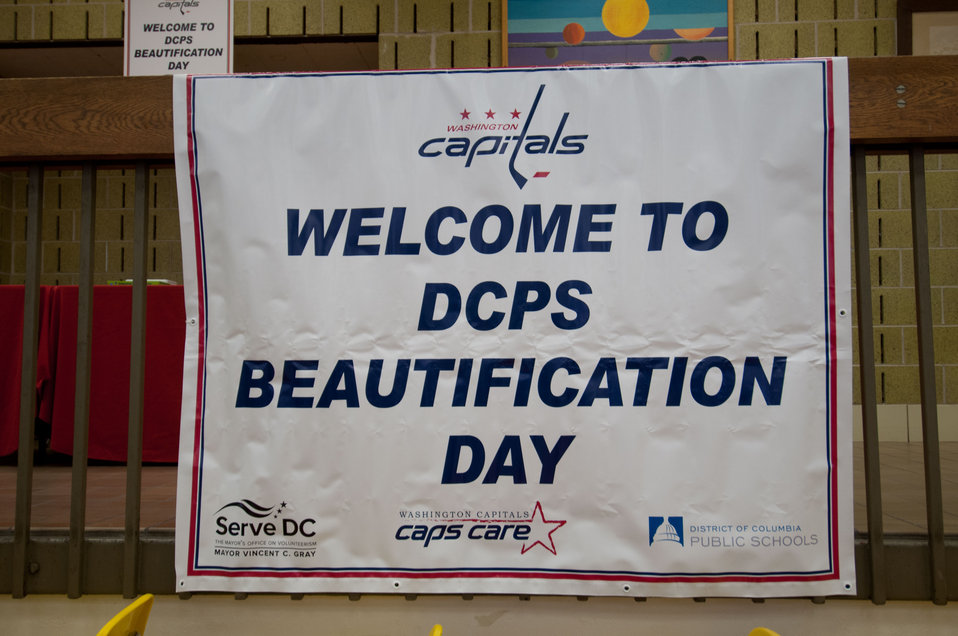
Welcome sign where U.S. Department of Agriculture (USDA) People’s Garden Executive Master Gardeners, friends, and family, along with Washington Capitals fans are volunteering in District of Columbia Public Schools’ (DCPS) Beautification Day, on Saturday, August 25, 2012, at Thurgood Marshall Elementary School, in Washington, D.C. Each year people are invited to help “spruce up” public school facilities in preparation for the first day of school. More than 70 volunteers pitched in at this large school facility. The People’s Garden effort involves building and painting raised planter boxes, then preparing the soil mixture so they are “ready to grow.” Additionally, a team that includes descendants of U.S. Supreme Court Justice Thurgood Marshall assembles a prefabricated garden toolshed. The Justice’s son, John Marshall leads the team, which includes Brianna the Justice’s great-grand daughter in one of many multi-generational efforts at this school today. Washington Capitals Forward Mike Riberio, his family and mascot Slapshot participated in every project underway at Marshall School. From the outside gardens, to inside murals, and robotics worktable construction, the teams made their goals.